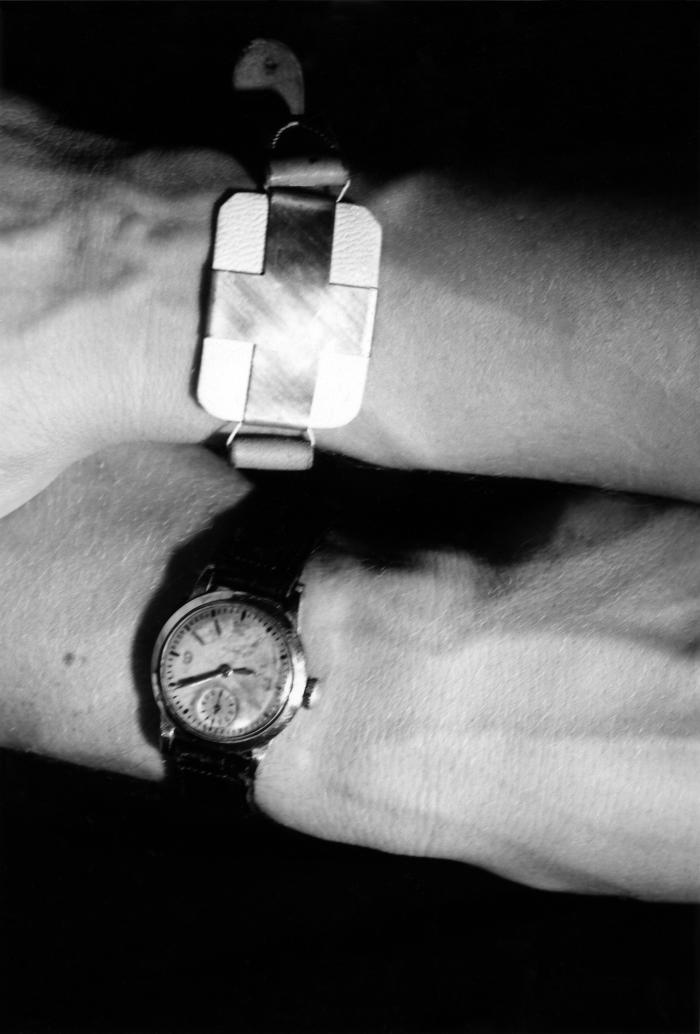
This historic 1947 image, provided by the Center for Disease Control's (CDC), National Institute for Occupational Safety and Health (NIOSH), and obtained from the Nat. Institutes of Health's Photographic Unit, depicted a metallic arm band on a person's right wrist, which contained a photosentitive film. Analyzed on a regular basis, this simple device was intended to reveal whether or not the wearer was being subjected to a high level of radioactivity. The higher the levels of radioactivity to which the wearer was exposed would be revealed as the film's changes in appearance. The other wrist bore a wrist watch mainly for comparative purposes. See PHL #9587 for a look at the band alone.